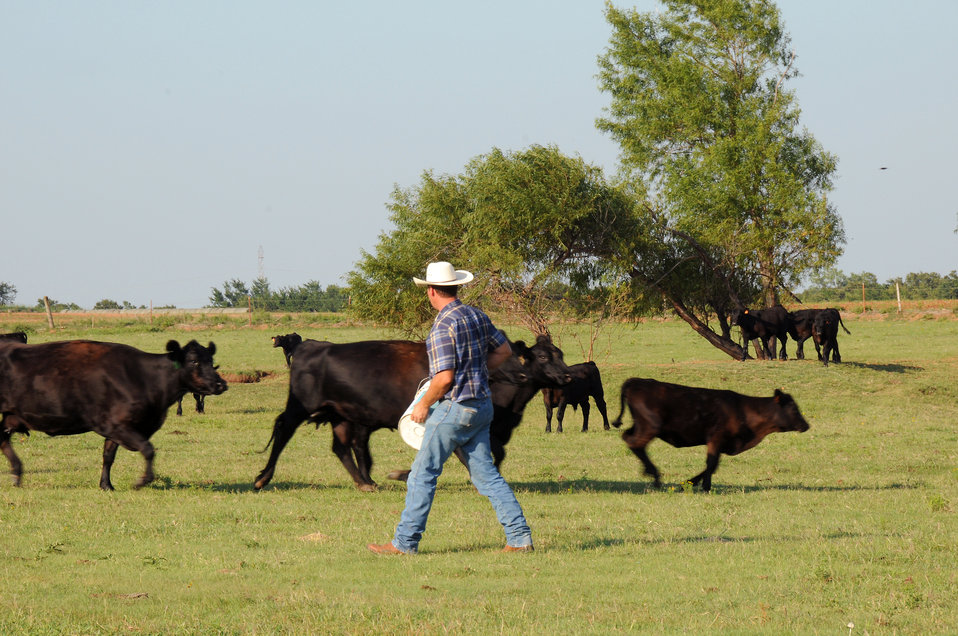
New young farmer Steve Burris feeds the Angus cattle on his farm on August 13, 2009. Burris has always been a strong believer that farms should remain in the family, passed down from generation to generation. His conviction became a reality for his own family recently when his father-in-law decided to retire after 69 years, and to sell Burris the property his family had grown up on and farmed. Burris decided to apply at his local U.S. Department of Agriculture (USDA) Farm Service Agency (FSA) county office in McLoud, Oklahoma for both a Beginning Farmer and Rancher Direct Operating Loan (DOL) and Ownership Loan (OL). Due to the passage of the American Recovery and Reinvestment Act (ARRA) Burris received his loan in record time. The DOL helped him purchase the existing farm equipment, including a tractor and creep feeder, from his father-in-law and to pay off the remaining debt he held on the farm equipment he already owned. He purchased 65 cows from a private seller in a neighboring town and the loan allowed him to use some of his personal savings to purchase feed, and fertilizer for his winter wheat crop from a local vender. Burris’s OL was also approved, which enabled him to purchase the farm's existing home and 55 acres from his father-in-law. Burris was a high school agricultural education instructor for seven years, having earned his bachelors degree in agriculture science from Oklahoma State University. He is happy to be more involved in daily farming and splits his time breeding cattle with his wife Kathy and four children, and working as an agent for the local Farmer's Insurance Group office.